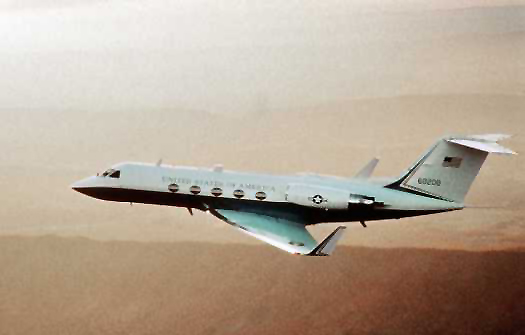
1980's -- The C-20A/B, military versions of the Gulfstream III, were chosen in June 1983 as the replacement aircraft for the C-140B Jetstar. In 1992, Gulfstream delivered their latest model, the C-20H (Gulfstream IV) to Andrews AFB.